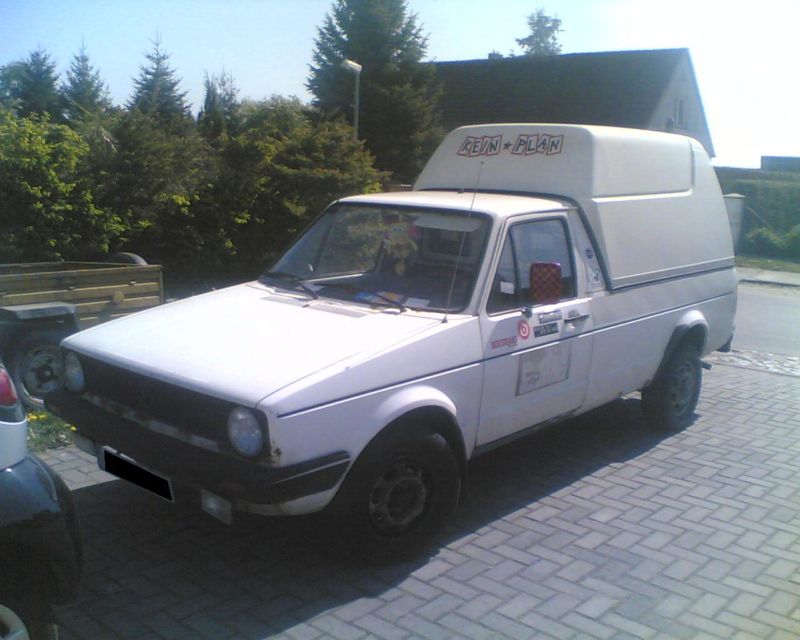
Deutsch: VW Caddy I